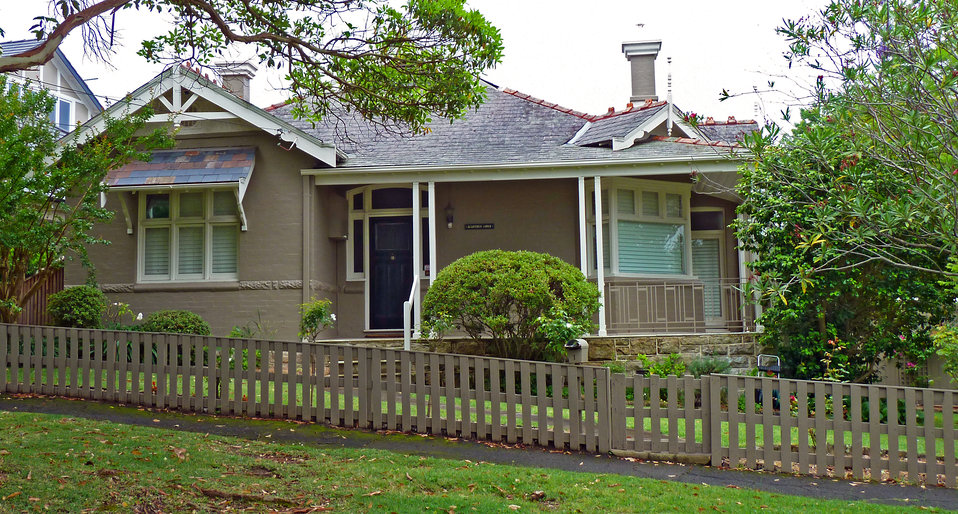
1 Blenheim Road, Lindfield, New South Wales, Australia.